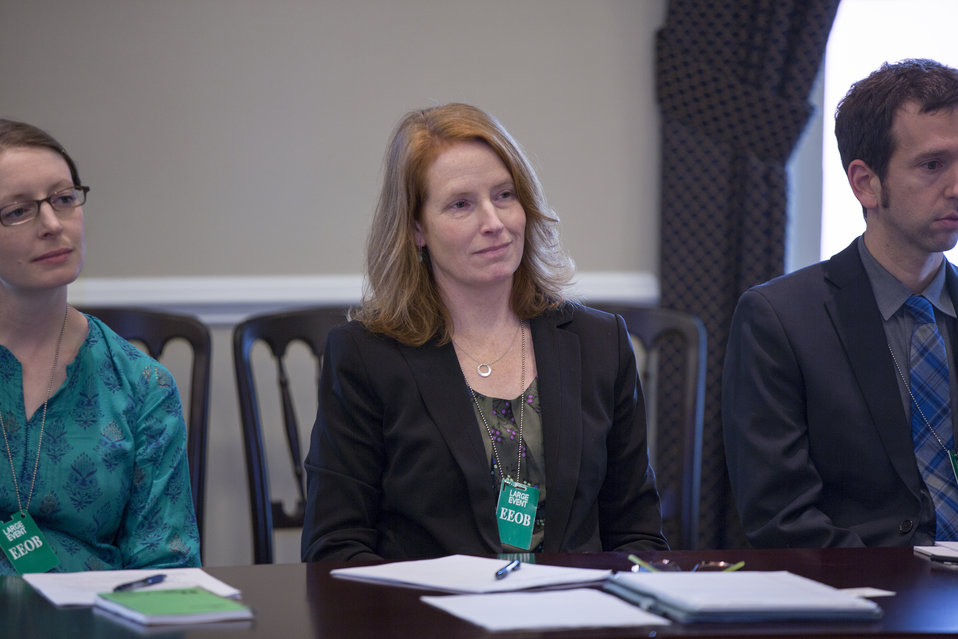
U.S. Department of Agriculture's (USDA) National Coordinator for Local and Regional Food Systems Elanor Starmer and Maine Sustainable Agriculture Programs at CEI, a Community Development Financial Institution (CDFI) Director Gray Harris and U.S. Department of Treasury CDFI program manager Mark Kudlowitz participate in White House Rural Council discussion on strategies to use local food to increase healthy food access and stimulate to local economies on Tuesday, Feb. 4, 2014 at the White House in Washington, DC.